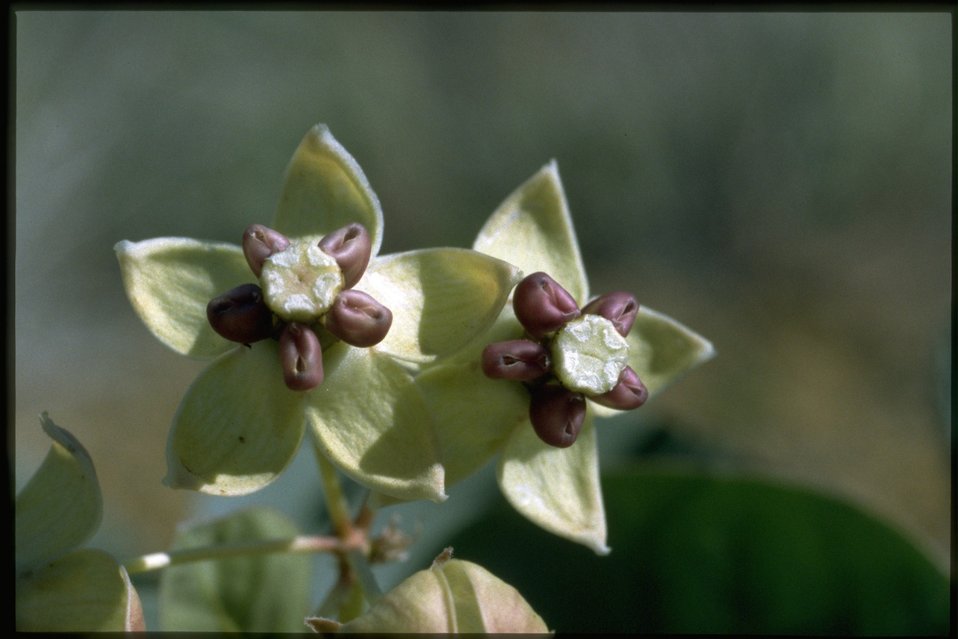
Closeup shot of Asclepias cordifolia.